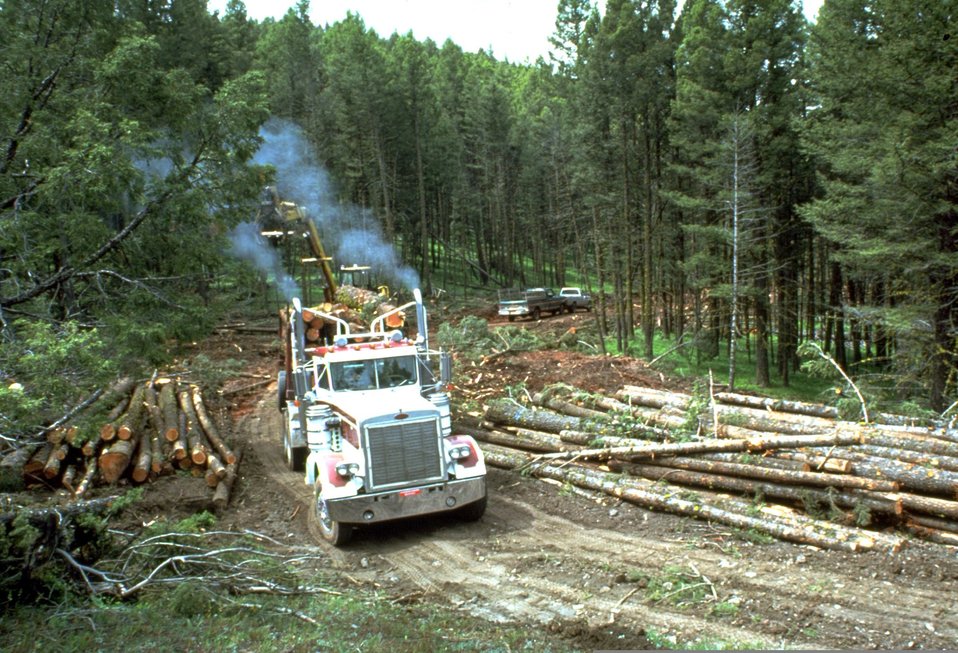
Log truck